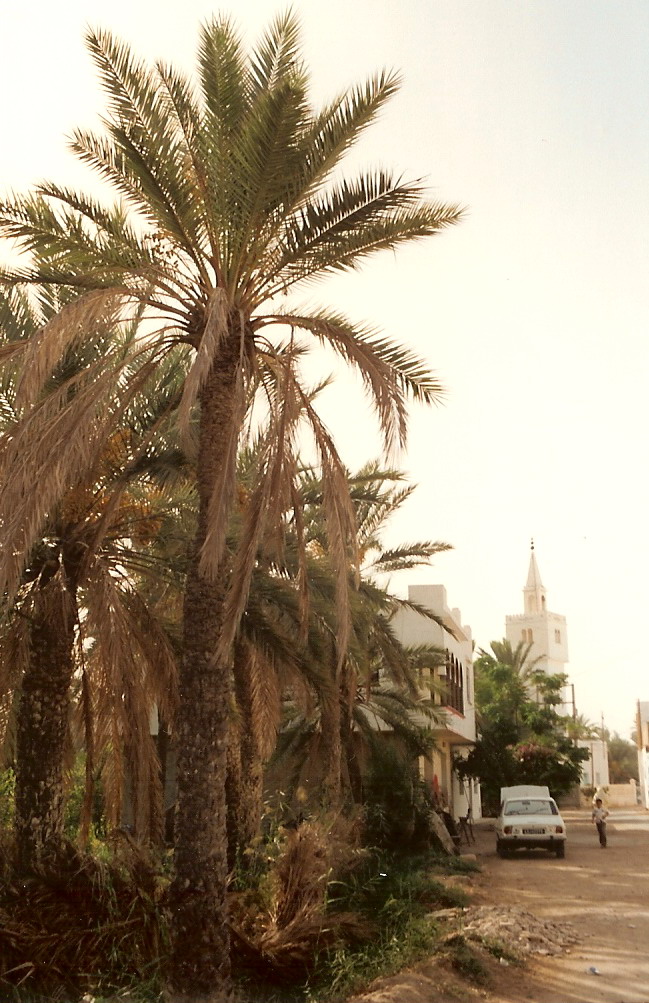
View of a minaret near a palm grove of Gabes, Tunisia